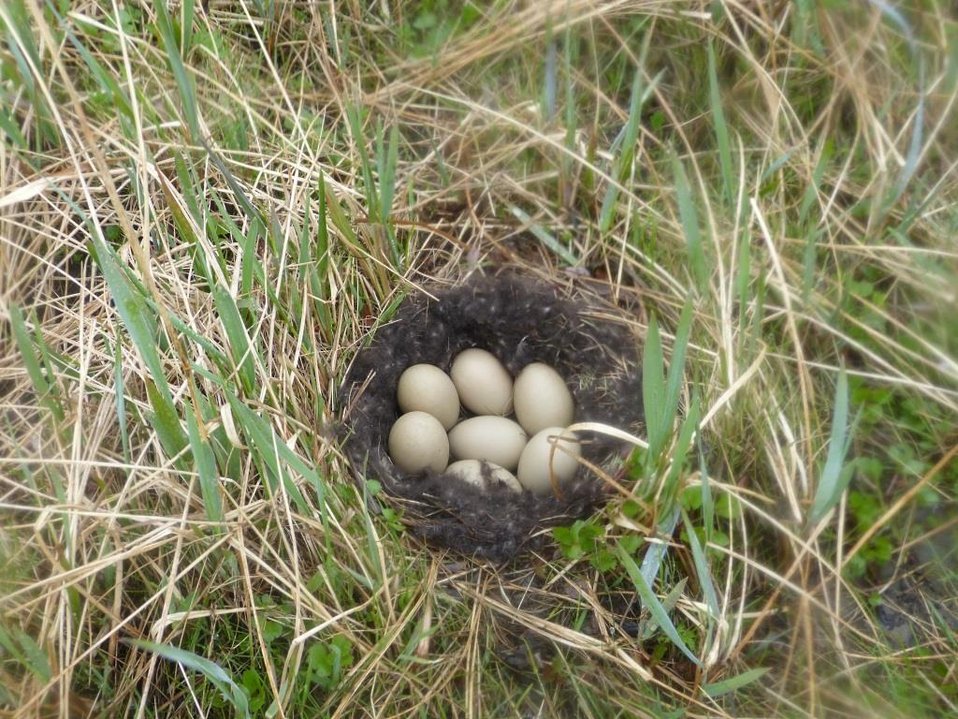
STEI Nest Tutakoke 6-21-2013 KSowl (5) - Copy

Nest of a Steller's Eider found at the Black Brant research area near the mouth of the Tutakoke River on the Yukon Delta National Wildlife Refuge on 6/21/2013.

Photo by Kristine Sowl, USFWS
Photo is public domain